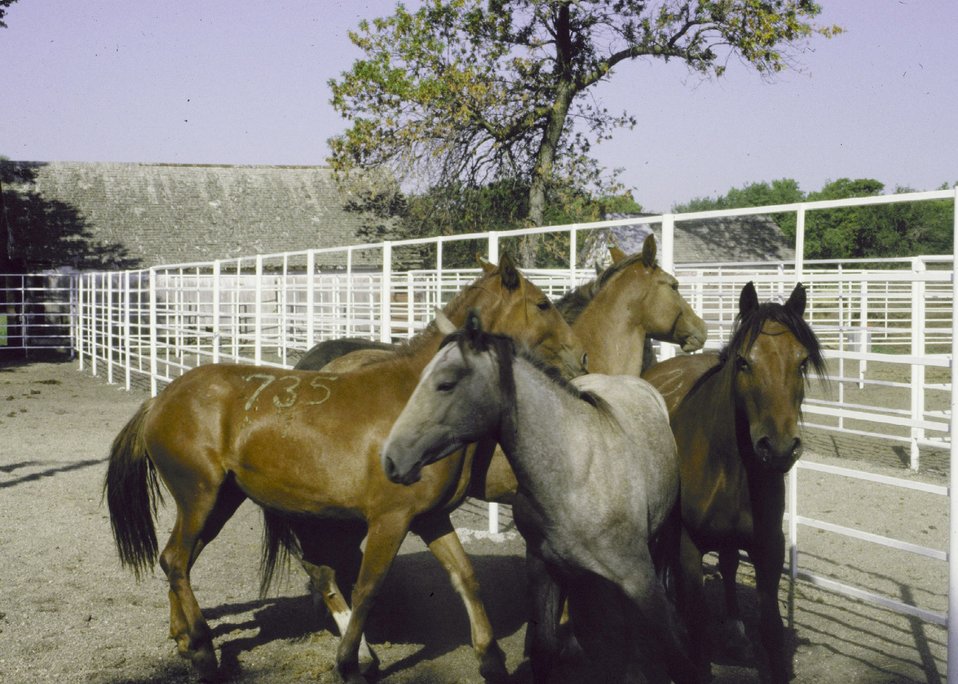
Wild horses in the Palomino Valley, Valley Adoption Center.